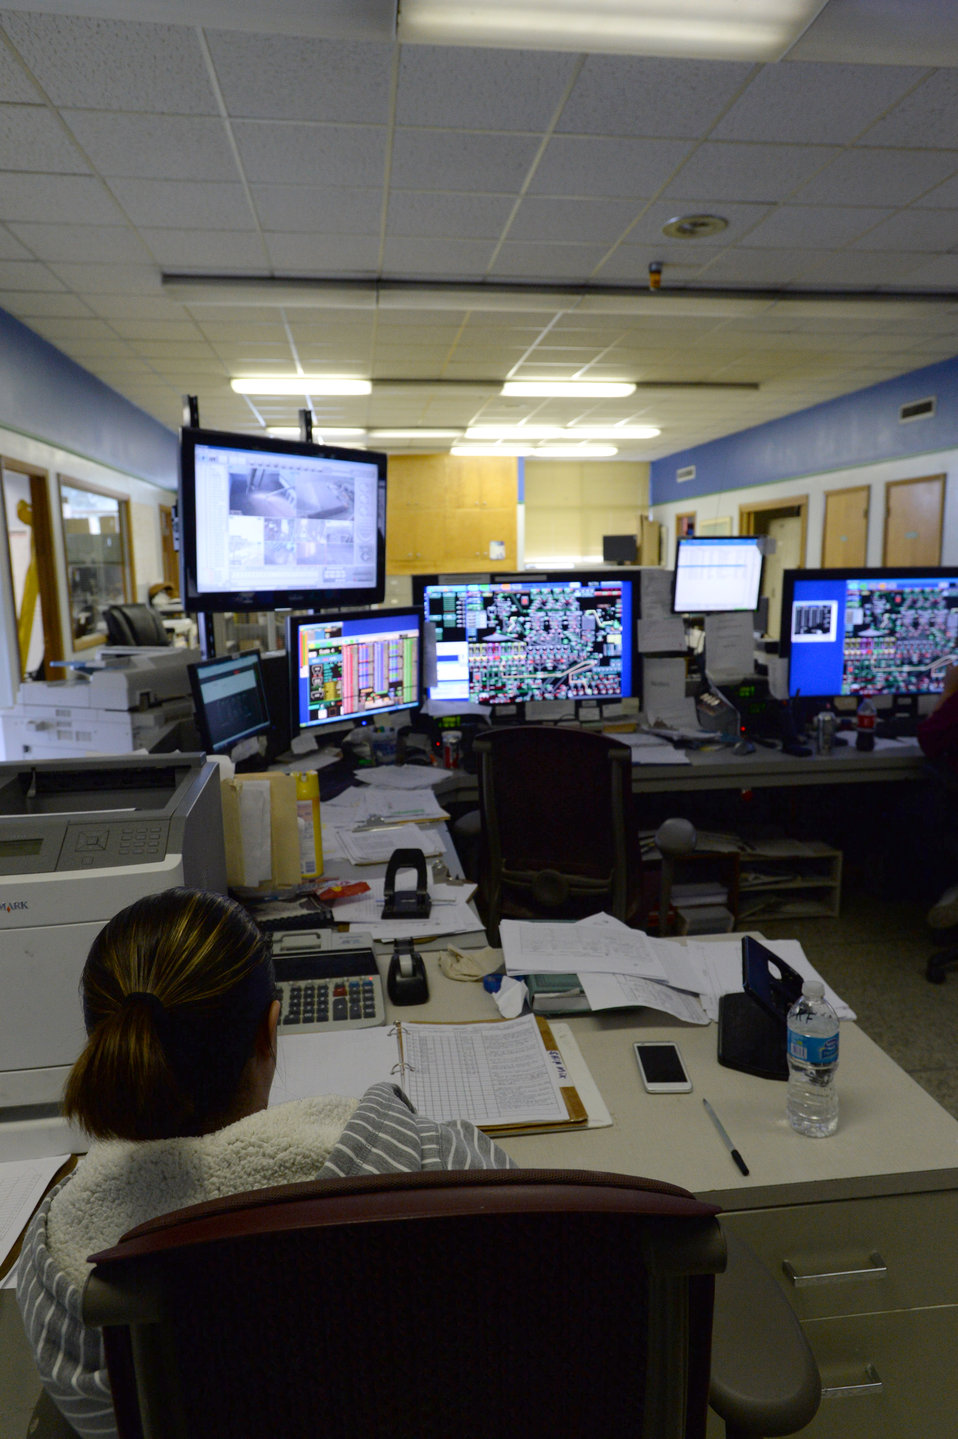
The U.S. Department of Agriculture (USDA) Grain Inspection, Packers and Stockyards Administration (GIPSA) Federal Grain Inspection Service (FGIS) monitors grain operations near the Port of New Orleans in New Orleans, LA on Tuesday, Nov. 19, 2013.